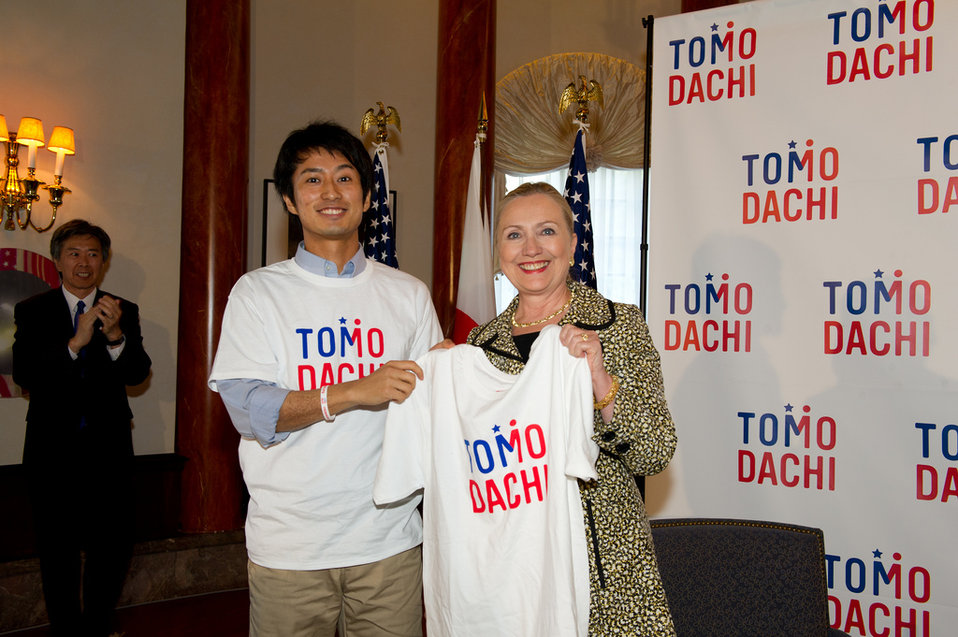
Secretary Clinton With Japanese Youth

U.S. Secretary of State Hillary Rodham Clinton poses for a photo with a member of the Tomodachi program youth in Tokyo, Japan, on July 8, 2012.